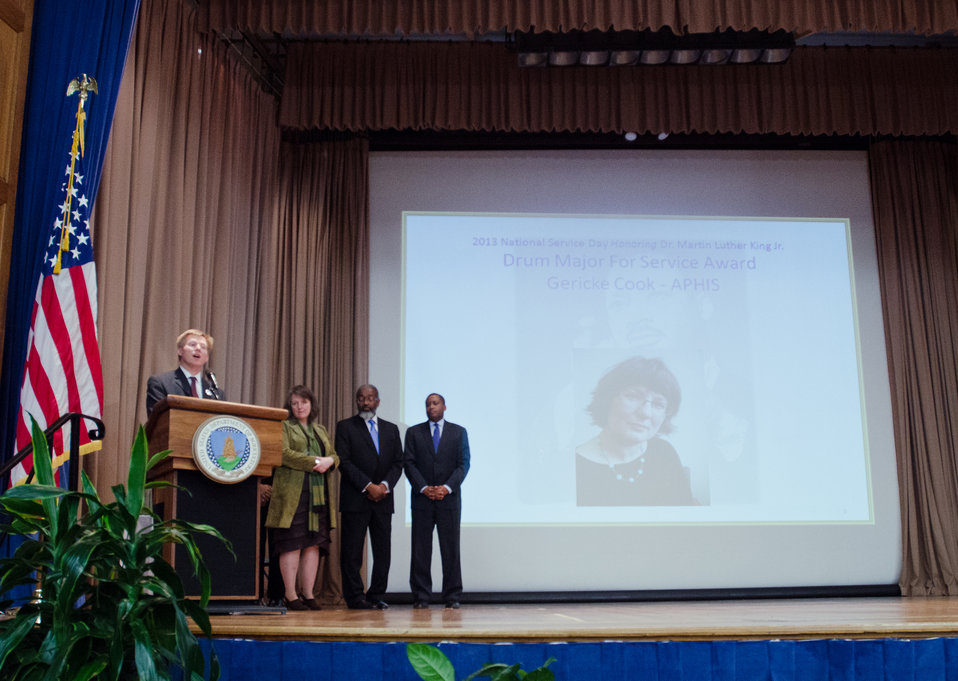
U.S. Department of Agriculture (USDA) Director Faith Based and Neighborhood Partnerships Max Finberg, left, provides some insight to the achievements of Animal and Plant Health Inspection Service (APHIS) Geographer Gericke Cook, a recipient of the Dr. Martin Luther King, Jr. National Service Day Drum Major Service Award, Cook wasnot able to receive it in person, in the Jefferson Auditorium, Washington, D.C. on Tuesday, Jan. 15, 2013 (L to R Agriculture Deputy Secretary Kathleen Merrigan, USDA Animal and Plant Health Inspection Service (APHIS) Administrator Dr. Gregory Parham, and Agriculture Assistant Secretary for Civil Rights Dr. Joe Leonard).